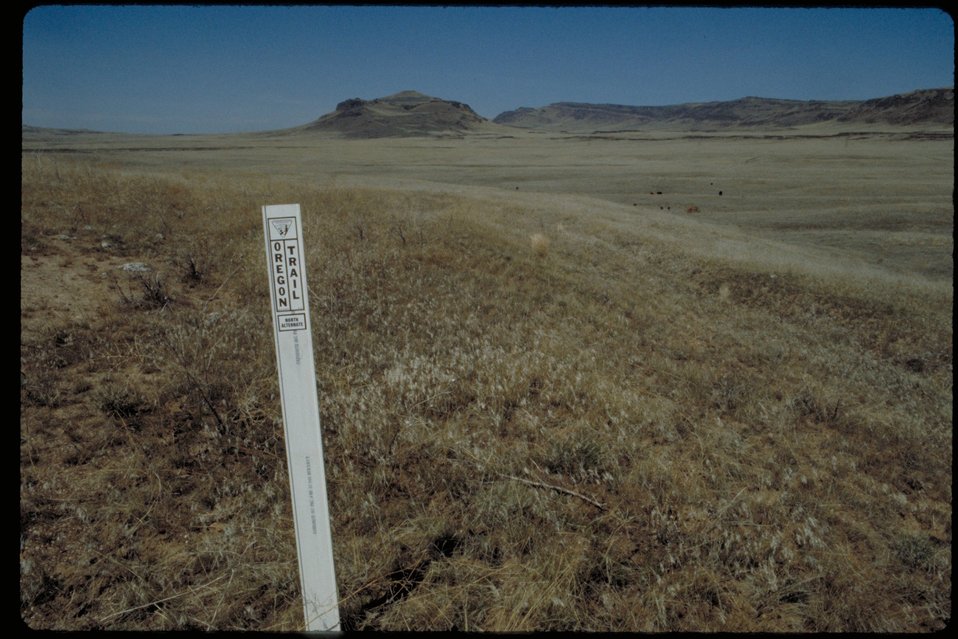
Oregon Trail south east of Teapot Dome Lower Snake River District